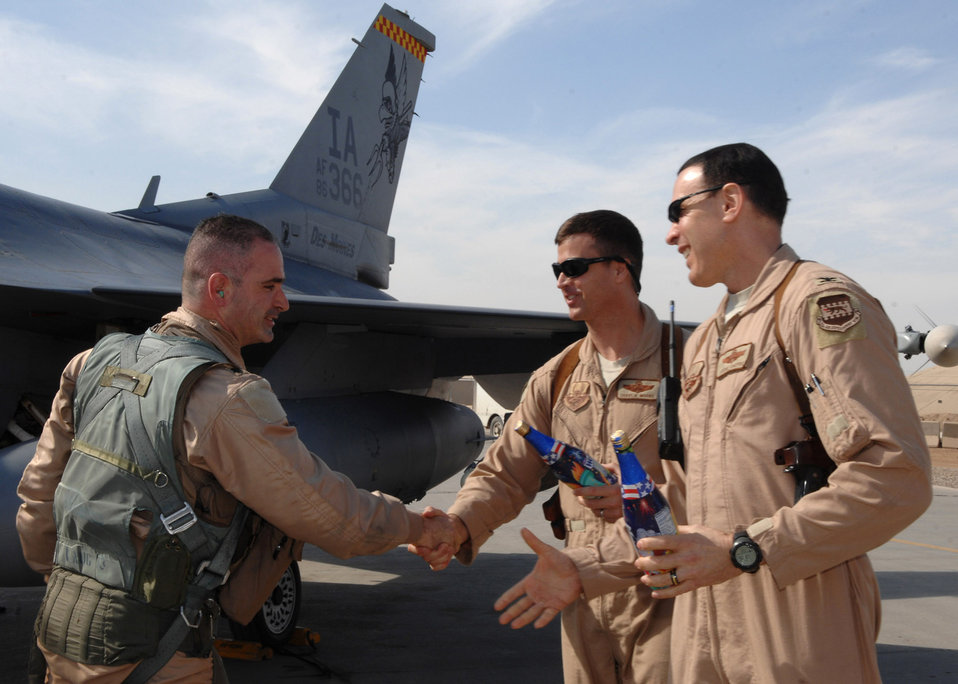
Pilot reaches 1,000 combat hours flown

Lt. Col. George Uribe is greeted and congratulated by Col. Steven Shepro and Col. Charles Moore after completing 1,000 combat flying hours as an F-16 Fighting Falcon pilot Feb. 17 at Balad Air Base, Iraq. Colonel Uribe is a 332nd Expeditionary Operations Group fighter pilot and deployed from Tyndall Air Force Base, Fla. Colonel Shepro is the 332nd Air Expeditionary Wing vice commander, and Colonel Moore is the 332nd Expeditionary Operations Group commander.